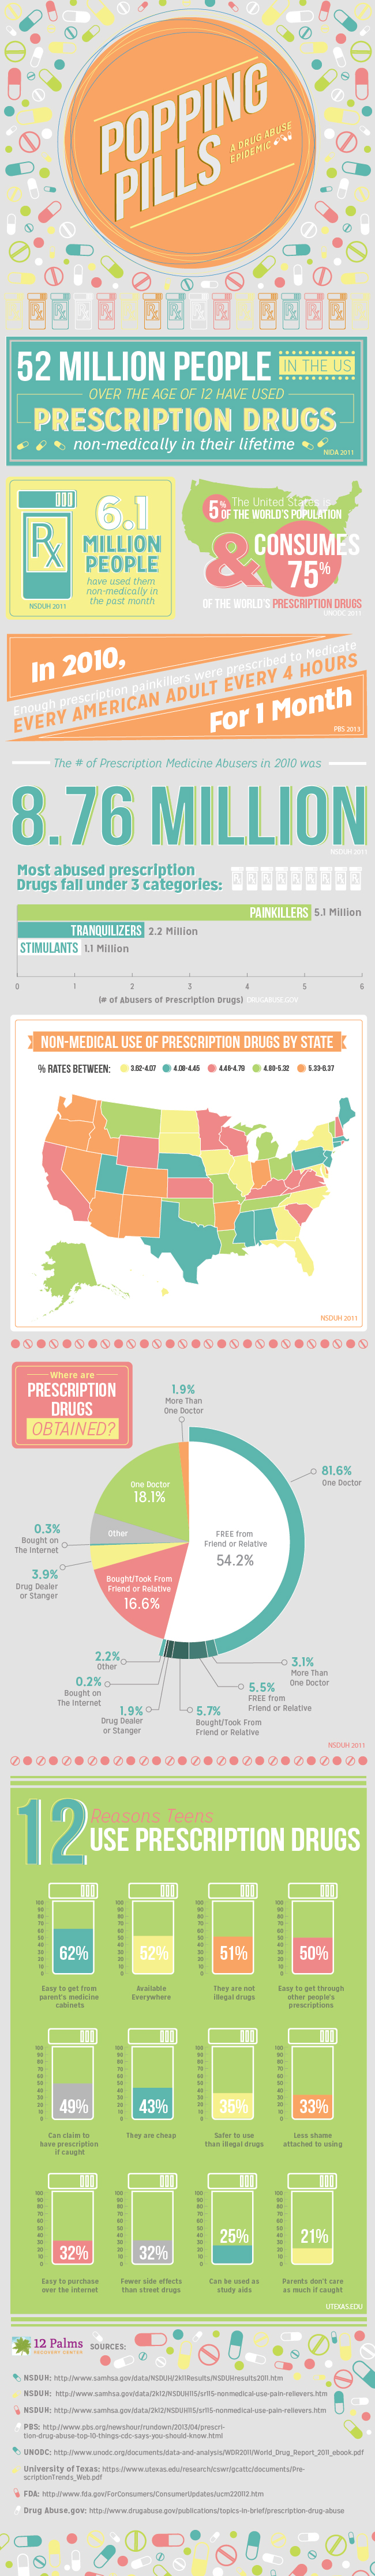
poppingpills-nida

Text Description of Infographic:

Figure 1: 52 Million people in the US, over the age of 12, have used prescription drugs non-medically in their lifetime.1

Figure 2: 6.1 Million people have used them non-medically in the past month.2 5 percent of the United States is the world's population and consumes 75 percent of the the world's prescription drugs.3

Figure 3: In 2010, enough prescription painkillers were prescribed to medicate every american adult every 4 hours for 1 month.4

The number of prescription medicine abusers in 2010 was 8.76 million. Most abused prescription drugs fall under 3 categories: 5

Painkillers: 5.1 million
Tranquilizers: 2.2 million
Stimulants: 1.1 million

Figure 4: Non-medical use of prescription drugs by state6

Figure 5: Where are prescription drugs obtained?7

0.3%: Bought on the internet
1.9%: More than one doctor
2.2%: Other
3.9%: Drug dealer or stranger
16.6% Bought/took from friend or relative
18.1%: One doctor
54.2%: FREE from friend or relative

Figure 6: Twelve reasons teens use prescription drugs:8

62%: Easy to get from parent's medicine cabinets
52%: Available everywhere
51%: They are not illegal drugs
50%: Easy to get through other people's prescriptions
49%: Can claim to have prescription if caught
43%: They are cheap
35%: Safer to use than illegal drugs
33%: Less shame attached to using
32%: Easy to purchase over the internet
32%: Fewer side effects than street drugs
25%: Can be used as study aids
21%: Parents don't care as much if caught

Figure 7: Sources

NSDUH: www.samhsa.gov/data/NSDUH/2k11Results/NSDUHresults2011.htm
NSDUH: www.samhsa.gov/data/2k12/NSDUH115/sr115-nonmedical-use-pa...
PBS: www.pbs.org/newshour/rundown/2013/04/prescription-drug-ab...
UNODC: www.unodc.org/documents/data-and-analysis/WDR2011/World D... (PDF, 10MB)
University of Texas: www.utexas.edu/research/cswr/gcattc/documents/Prescriptio... (PDF, 267KB)
FDA: www.fda.gov/ForConsumers/ConsumerUpdates/ucm220112.htm
Drug Abuse.gov: www.drugabuse.gov/publications/topics-in-brief/prescripti...

Fast Facts:

In 2011, 52 million people in the US age 12 had used prescription drugs nonmedically at least once in their lifetime, 6.2 million in the past month.

“Combating Misuse and Abuse of Prescription Drugs: Q&A with Michael Klein, Ph.D.” Consumer Updates. United States Food and Drug Administration, 28 July 2010. www.fda.gov/ForConsumers/ConsumerUpdates/ucm220112.htm

The United States has 5% of the world’s population & consumes 75% of the world’s prescription drugs.
Source: www.unodc.org/documents/data-and-analysis/WDR2011/World D... (PDF, 10MB)
OLD: Yachter, David (2009). Born a Champion: The Master Strategy for Maximum Health and Lasting Success. Outskirts Press.

Enough prescription painkillers were prescribed in 2010 to medicate every American adult every 4 hours for one month.
Kane, Jason. “Prescription Drug Abuse: Top 10 things CDC Says You Should Know.” PBS Newshour, 2013.
www.pbs.org/newshour/rundown/2013/04/prescription-drug-ab...

The number of prescription medicine abusers in 2010 was 7 million.
“Topics in Brief: Prescription Drug Abuse.” National Institute on Drug Abuse
www.drugabuse.gov/publications/topics-in-brief/prescripti...

Painkillers: 5.1 million abusers
Tranquilizers: 2.2 million abusers
Stimulants: 1.1 million abusers
“Topics in Brief: Prescription Drug Abuse.” National Institute on Drug Abuse
www.drugabuse.gov/publications/topics-in-brief/prescripti...

Map: nonmedical use of prescription drugs by state
“State Estimates of Nonmedical Use of Prescription Pain Relievers.” Substance Abuse and Mental Health Services Administration, 8 Jan. 2013.
www.samhsa.gov/data/2k12/NSDUH115/sr115-nonmedical-use-pa...

Double pie chart: where prescription drugs are obtained
“Results from the 2011 National Survey on Drug Use and Health: Summary of National Findings.” Substance Abuse and Mental Health Services Administration, Sept. 2012.
www.samhsa.gov/data/nsduh/2k11results/nsduhresults2011.htm

Reasons Teens Cite for Using Prescription Drugs
Maxwell, Jane Carlisle. “Trends in the Abuse of Prescription Drugs.” The Gulf Coast Addiction Technology Transfer Center. The University of Texas at Austin, Nov. 2006. www.utexas.edu/research/cswr/gcattc/documents/Prescriptio... (PDF, 267KB)
UPDATED INFO:

On the 52 Million. This stat is actually reported to be the same number in 2011 via the NIDA, Nov. 2011 report. Here’s another source: www.justice.gov/dea/pr/multimedia-library/publications/pr... (PDF, 4MB)

In 2011, there were 6.1 million persons (2.4 percent) aged 12 or older who used prescription-type psychotherapeutic drugs nonmedically in the past month. These estimates were lower than the estimates in 2010 (7.0 million or 2.7 percent)

6.1 MILLION people have used them non-medically in the past month.
www.samhsa.gov/data/NSDUH/2k11Results/NSDUHresults2011.htm (NSDUH, 2011)

Among youths aged 12 to 17, the rate of current nonmedical use of prescription-type drugs declined from 4.0 percent in 2002 to 2.8 percent in 2011. The rate of nonmedical pain reliever use declined during this period from 3.2 to 2.3 percent among youths. = 2.8% of population at end of 2011 (312.8 million) - That means the # of Prescription Medicine Abusers in 2010 was: 8.76 MILLION.
www.samhsa.gov/data/NSDUH/2k11Results/NSDUHresults2011.htm

US Population: End of 2011 - 312.8 Million www.usnews.com/opinion/blogs/robert-schlesinger/2011/12/3...